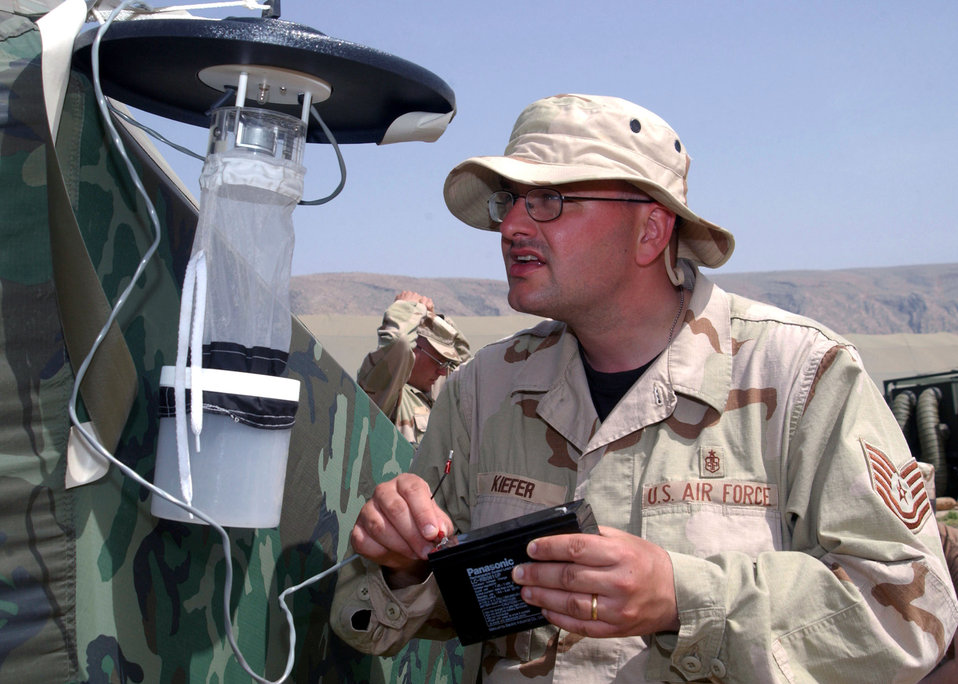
Bug trappin'

OPERATION IRAQI FREEDOM -- Tech. Sgt. Heinz Kiefer, 86th Expeditionary Contingency Response Group, Environmental Medicine Flight, sets up a mosquito trap near work tents at the edge of the airfield on April 3, 2003. Operation Iraqi Freedom is the multi-national coalition effort to liberate the Iraqi people, eliminate Iraqi's weapons of mass destruction and end the regime of Saddam Hussein.